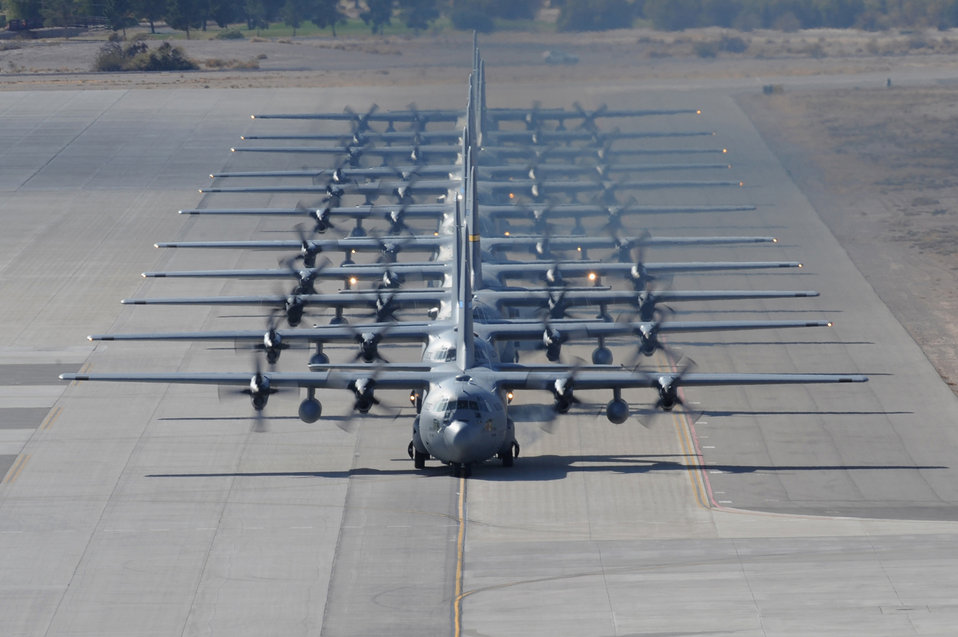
Fall into line

A line of C-130 Hercules taxi during a Mobility Air Forces Exercise on Nov. 18, 2009, at Nellis Air Force Base, Nev. Approximately 40 C-17 Globemaster IIIs and C-130s from Air Force bases around the U. S. flew about 400 Soldiers from Fort Bragg, N.C., for airdrops on the Nevada Test and Training Range.